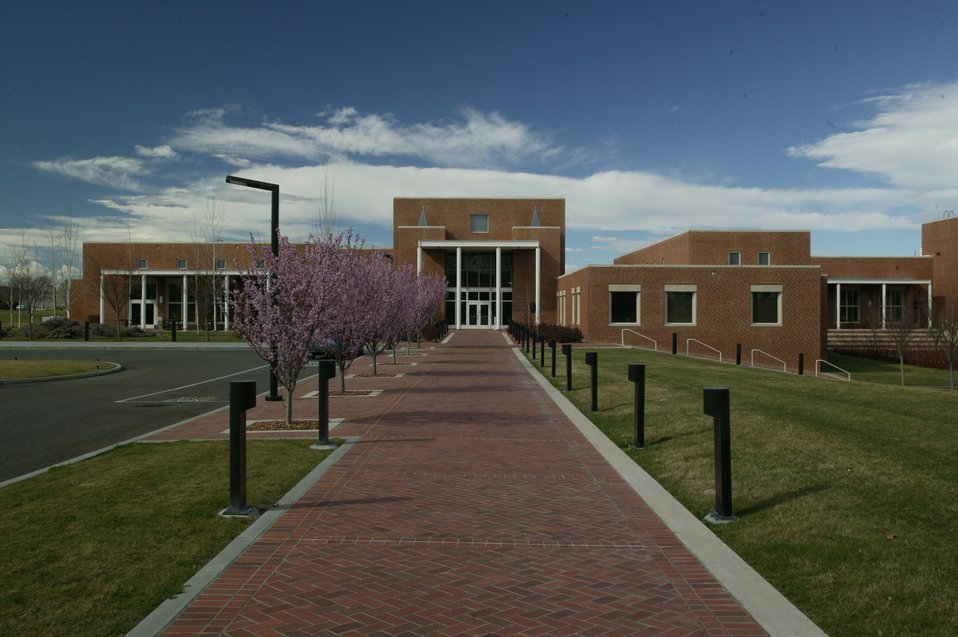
The Williams R. Wiley Environmental Molecular Sciences Laboratory (EMSL) is located at DOE's Pacific Northwest National Laboratory.

The EMSL, a national user facility, plays a major role in creating safe, permanent, cost effective solutions to many of the country's environmental problems. Multidisciplinary team from across the country work together to understand and control molecular processes, leading to solutions of environmental problems as well as achieve advances in energy, new materials, health, medicine and agriculture.